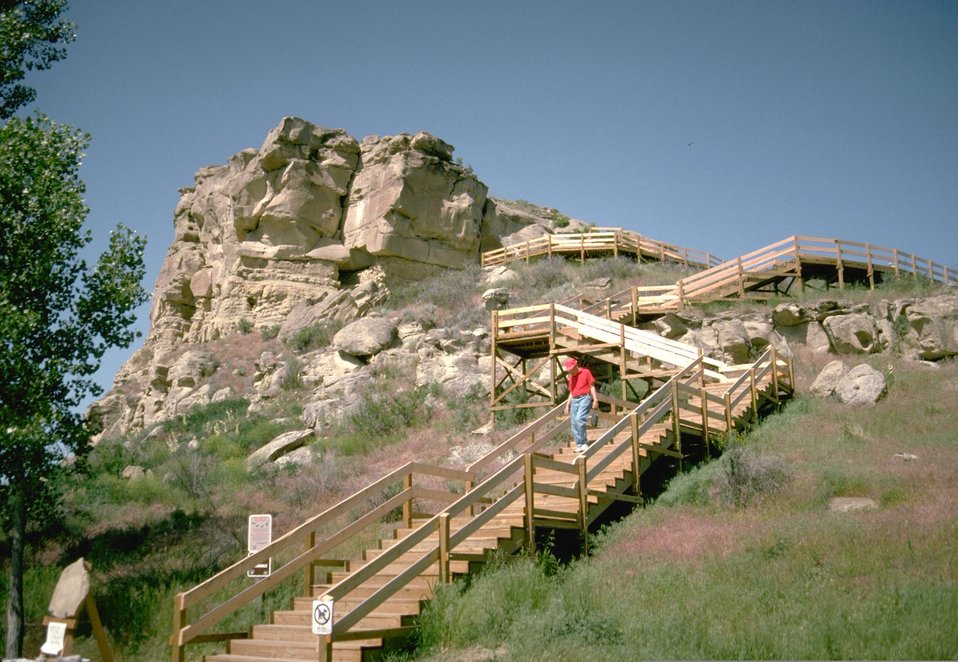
Pompeys Pillar with stairs